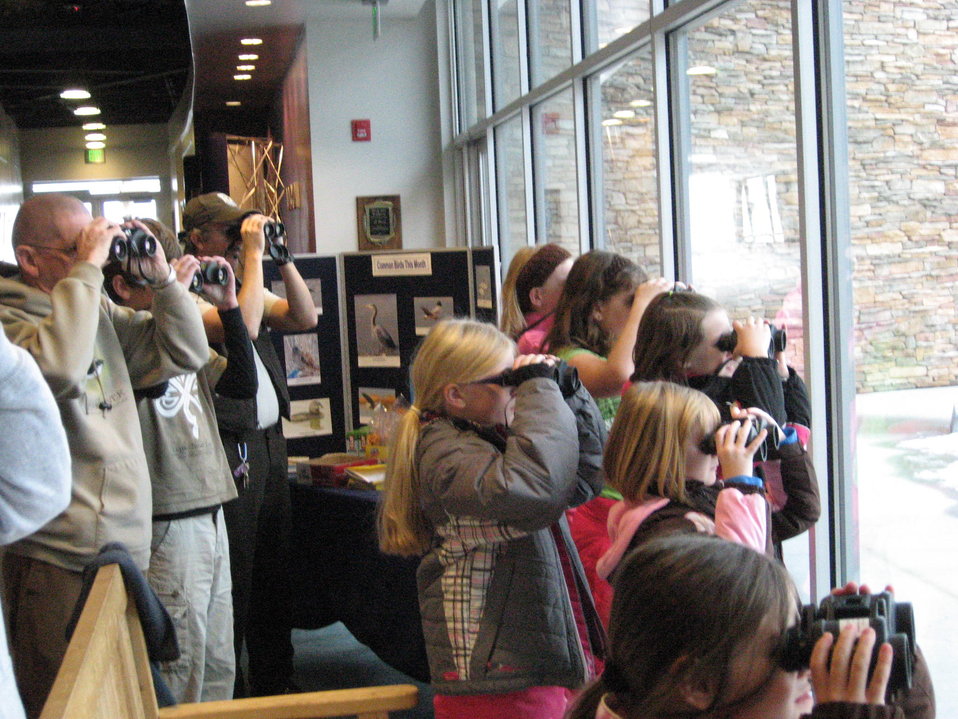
Binocular Boot Camp

Youth participate in binocular boot camp at the Bear River Refuge for CBC4Kids (Christmas Bird Count for Kids). This event allows youth to be the scientist - participating in a binocular boot camp, learning how to identify birds, and then helping the Refuge biology team to count birds.